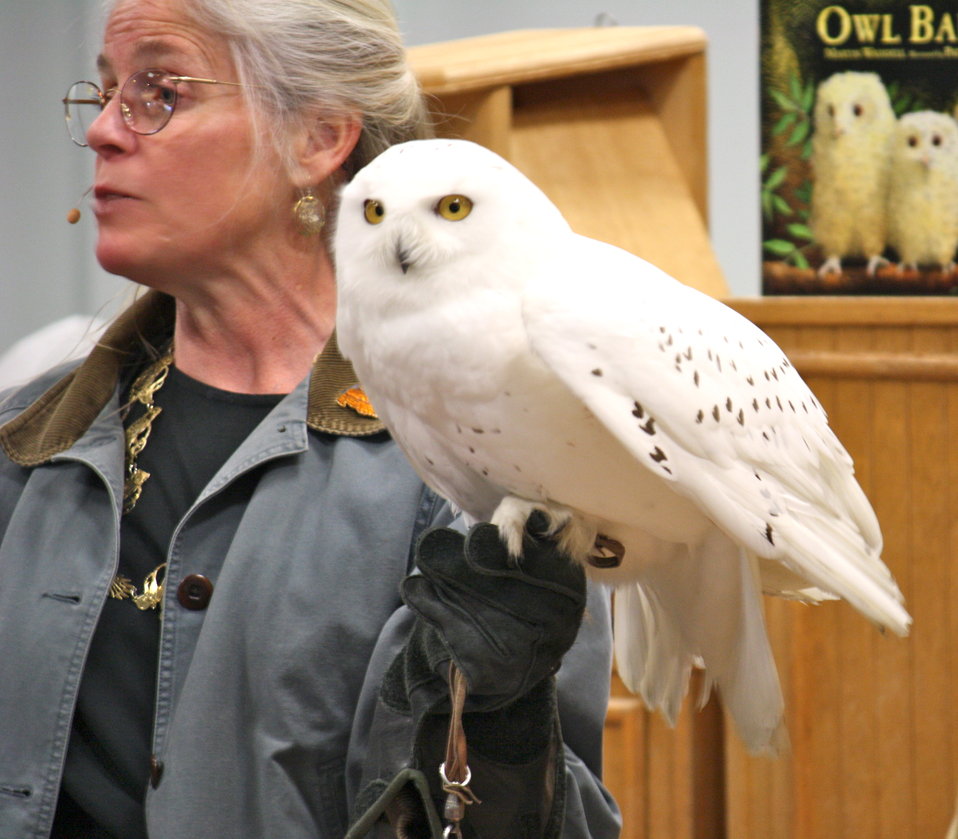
Snowy owl presented by Eyes On Owls at the annual fishing derby held at the USFWS Northeast Regional Office.